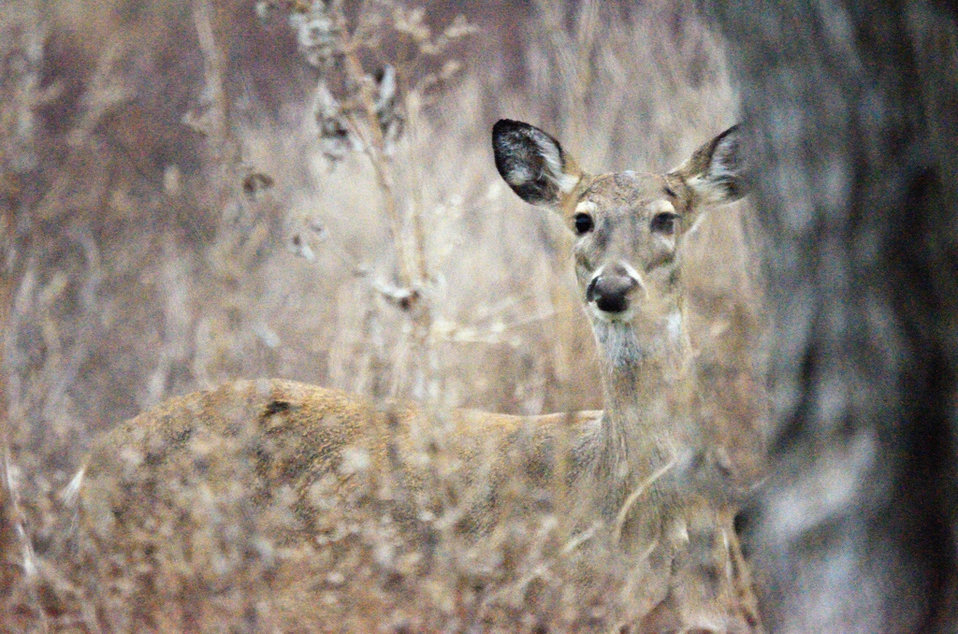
shy doe

Hagerman National Wildlife Refuge, TX
January 2011